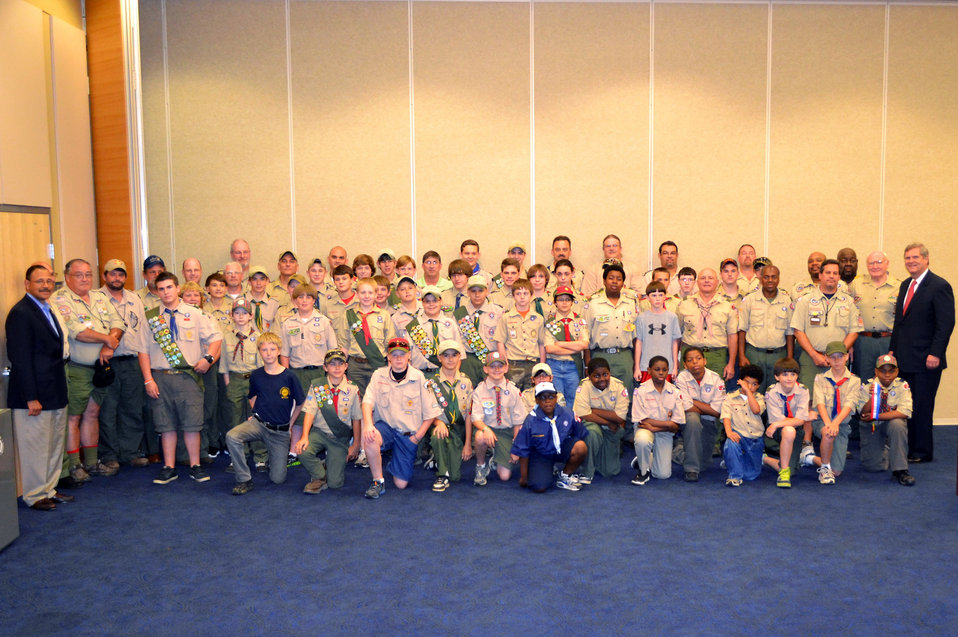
Agriculture Secretary Tom Vilsack met with the Chehaw Council Boy Scouts of America at Albany State University in Albany, Georgia on Friday, May 4, 2012.